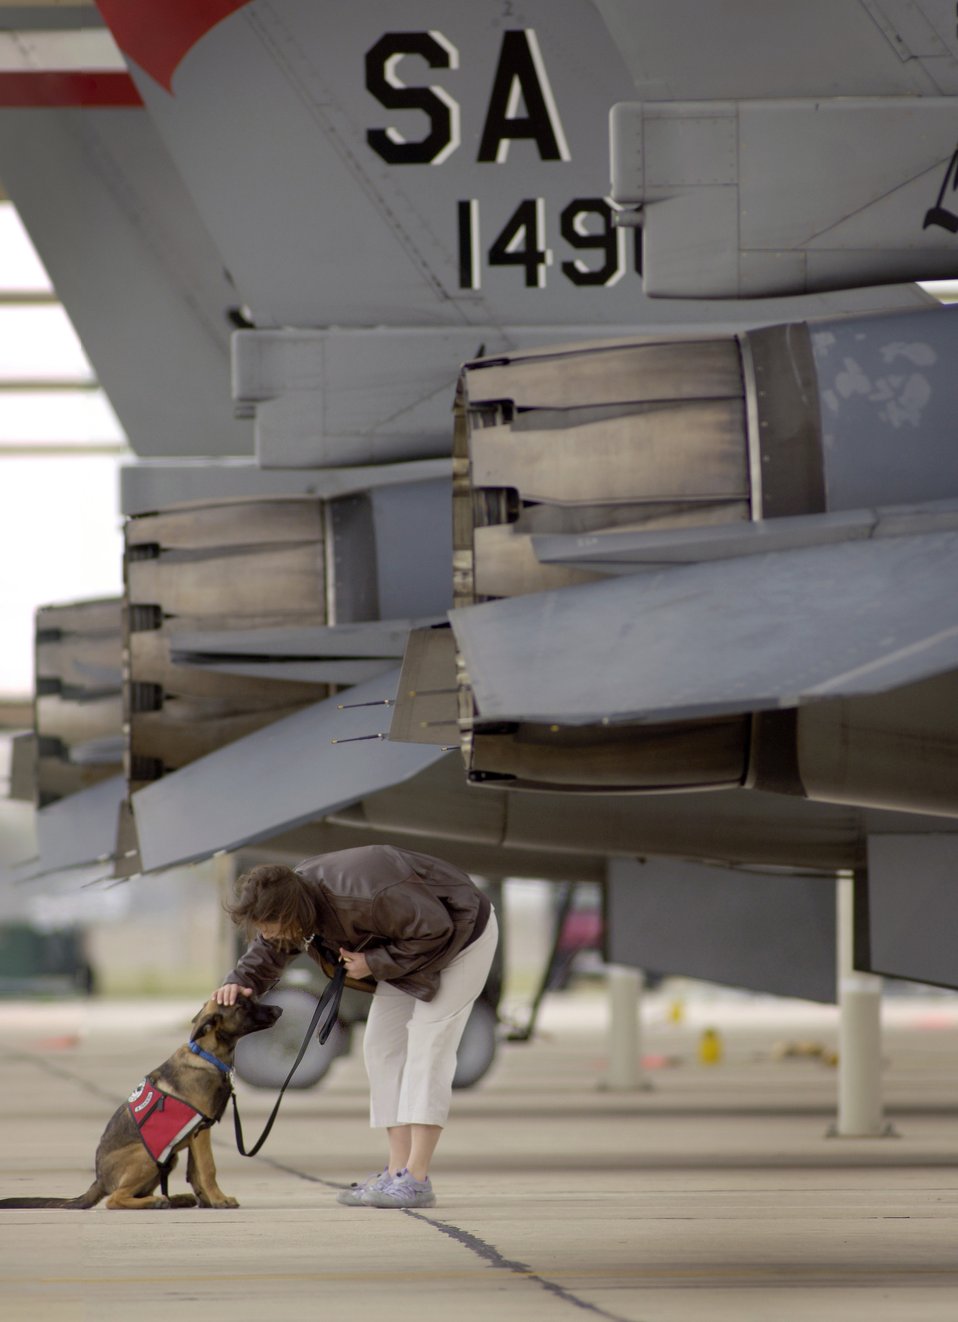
Positive reassurance

Liz Clemmons gives positive reassurance to her adopted 11-week-old military working dog, Atticus, on his first trip to the Lackland Air Force Base, Texas, flightline. Her husband, Lt. Col. Gordon Clemmons, flies the F-16 Fighting Falcon.